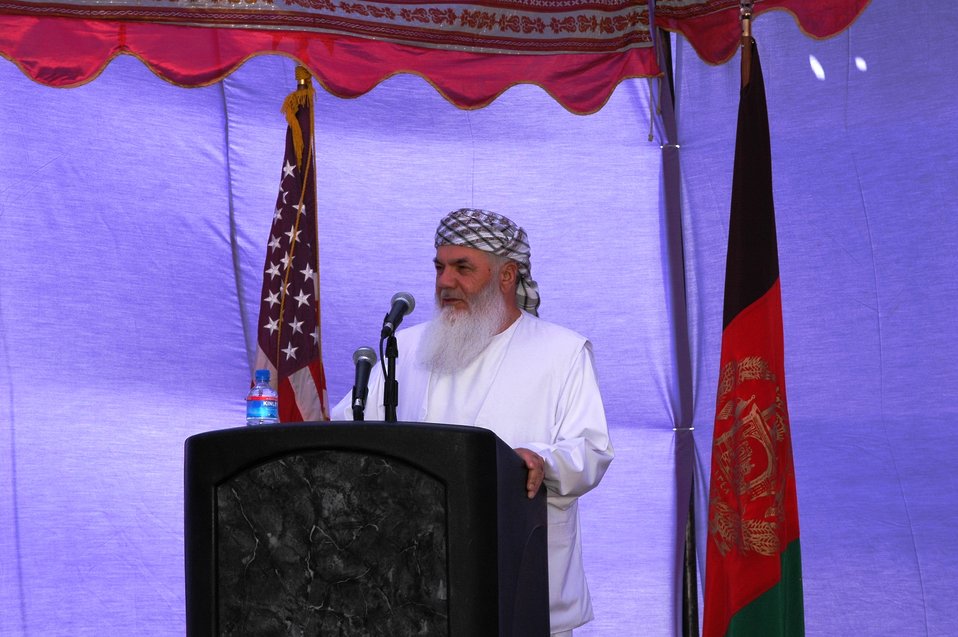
105 MW Tarakhil Power Plant Handover